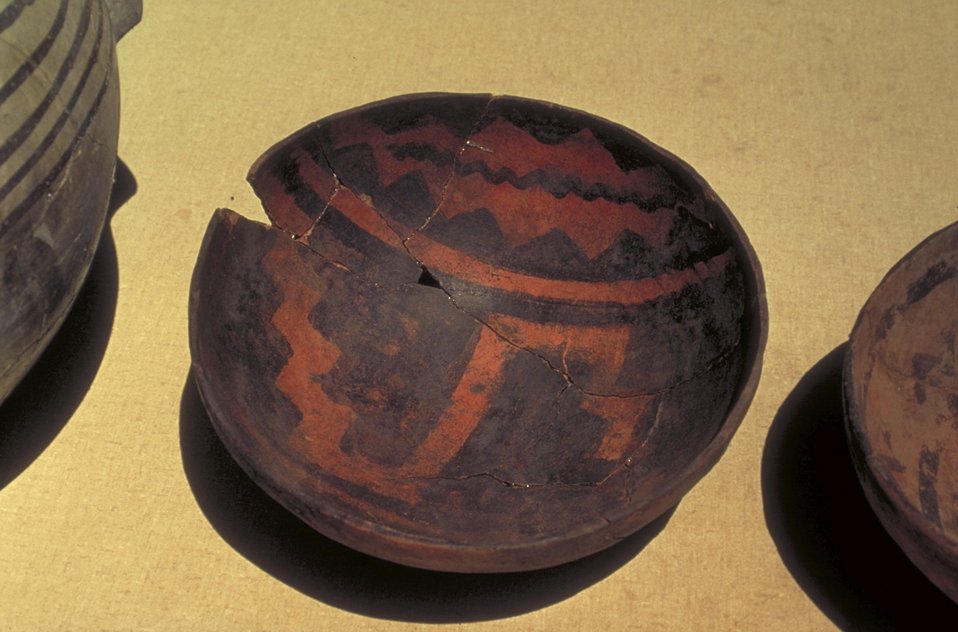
Artifacts from the Anasazi Heritage Center in Dolores, Colorado.